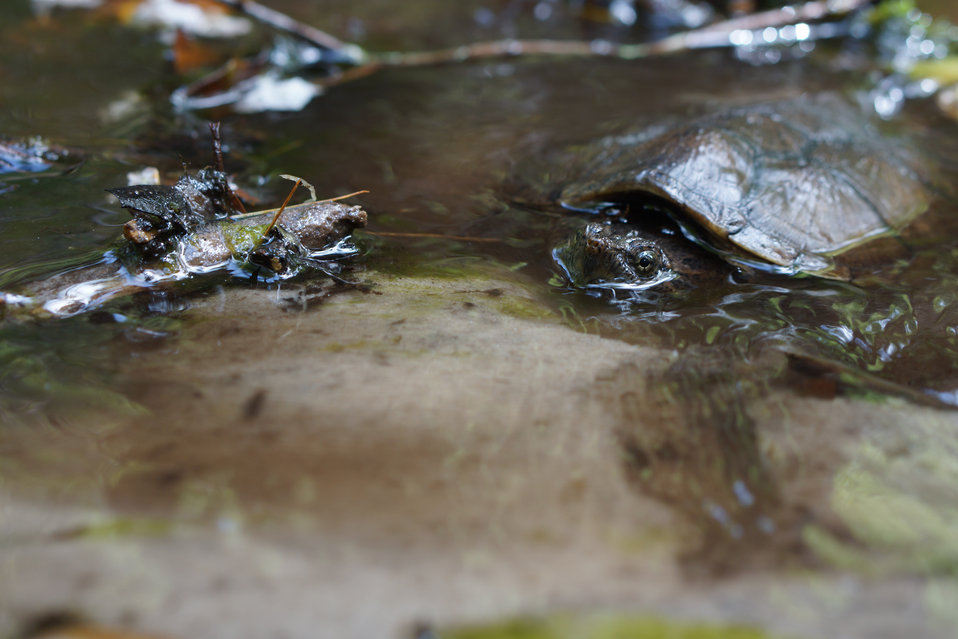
Partially submerged snapping turtle

In May, bog conservationists from Tennessee, North Carolina, and Georgia convened in the north Georgia mountains for the spring, 2014 meeting of the Bog Learning Network. The event provided an opportunity for biologists to see, first hand, the result of management efforts at two north Georgia bogs. More importantly, the outings provided an opportunity to share innovative approaches to bog management, such as the role of the Georgia Plant Conservation Alliance in conserving rare plants and coordinating a cadre of volunteers to work on bog management.

The Bog Learning Network was convened in the winter of 2013 as a way to bring together people working for bog conservation across the Southern Appalachians. Southern Appalachian bogs are one of North America’s rarest habitats and home to many rare plants and animals.